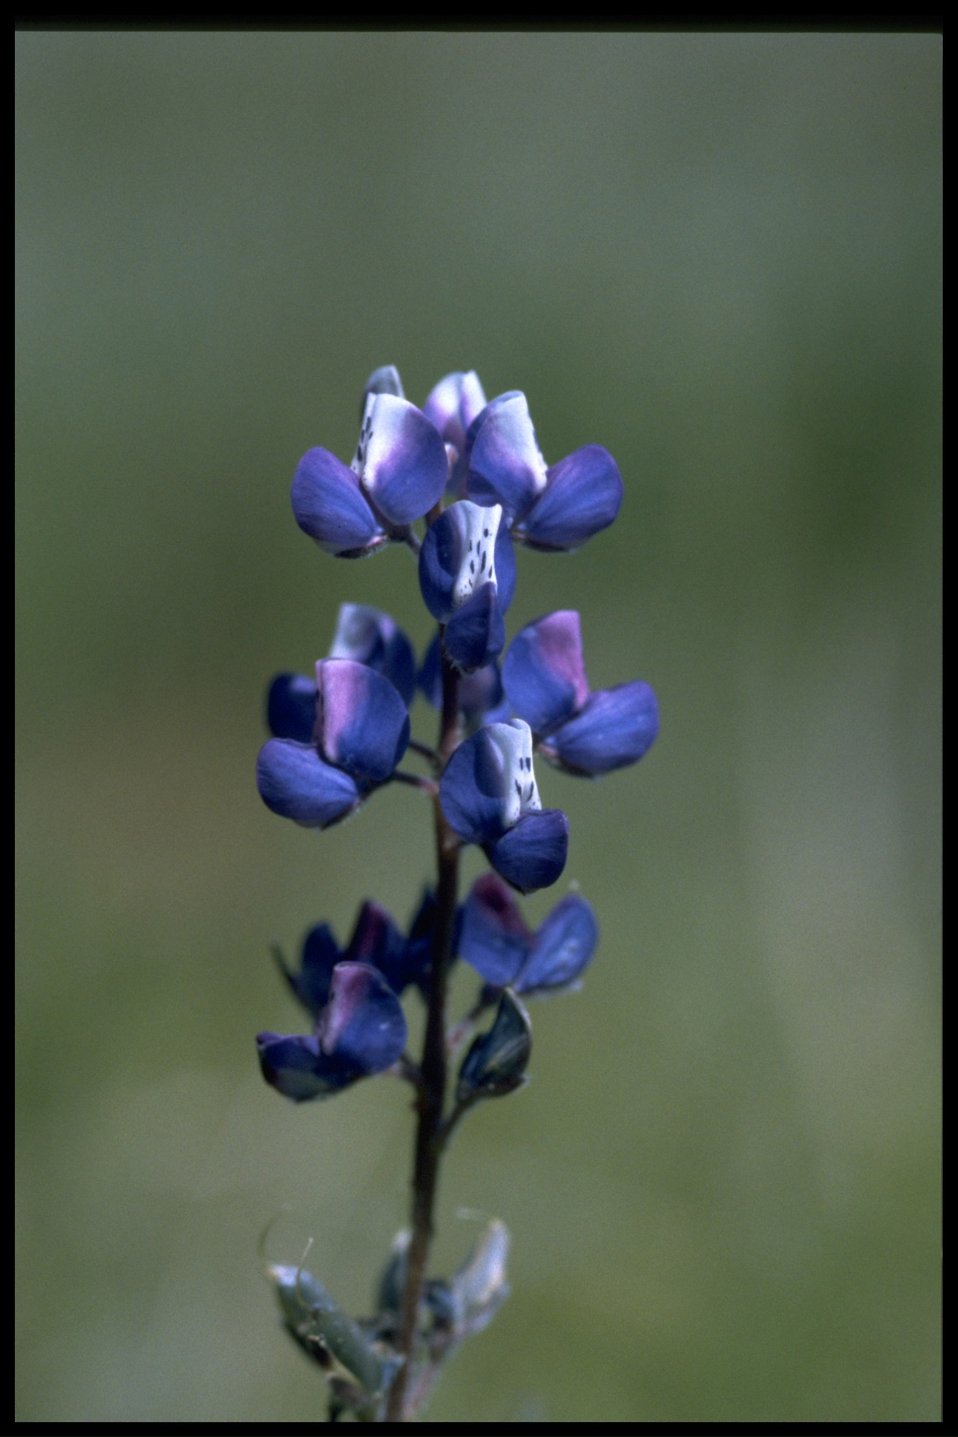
Closeup shot of Lupinus bicolor.